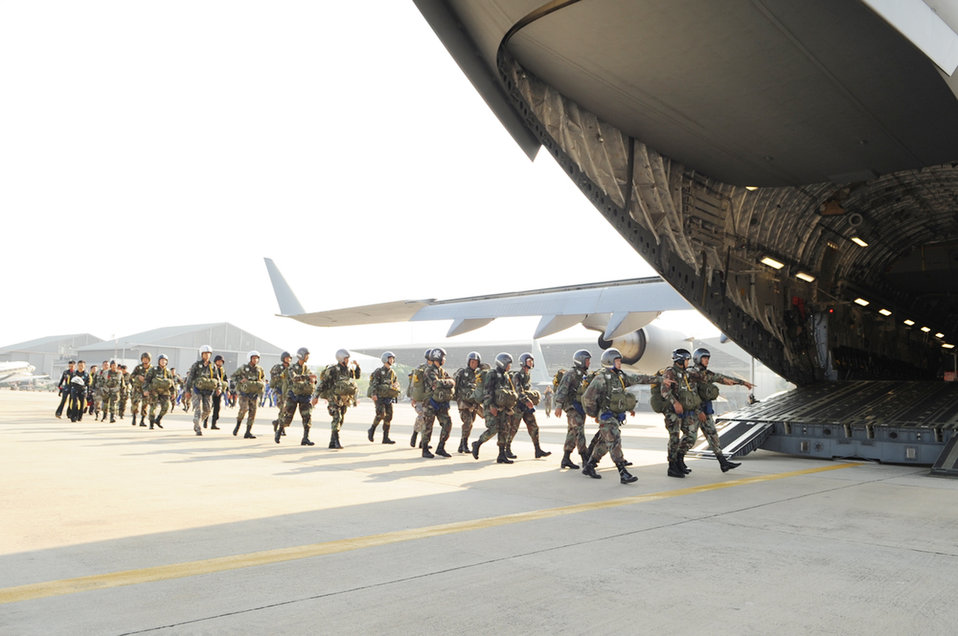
COPE TIGER 2010

Members of the Royal Thai Air Force parachute team prepare to board a U.S. Air Force C-17 Globemaster III from the 535th Airlift Squadron at Joint Base Pearl Harbor-Hickam, Hawaii, March 3, 2010, during Cope Tiger 2010 at Dom Muang Royal Thai Air Force Base, Thailand.